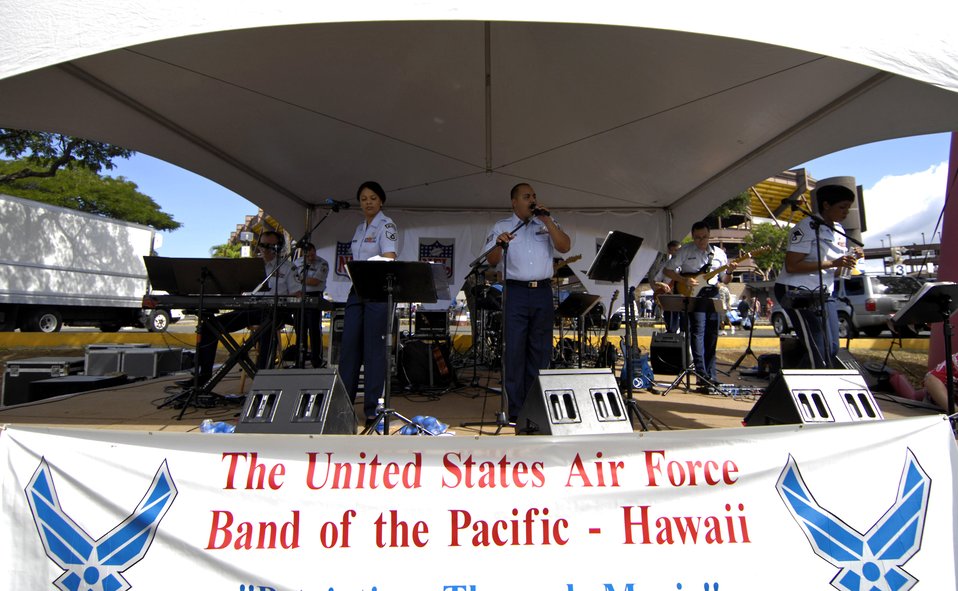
Pro Bowl Airmen

The United States Air Force Band of the Pacific plays to a 2007 Pro Bowl crowd during pre-game festivities in the parking lot Feb. 10 at Aloha Stadium in Hawaii. Servicemembers from all branches of the U.S. military in Hawaii participated in Pro Bowl activities. The Pro Bowl brings together the top players in the National Football League.